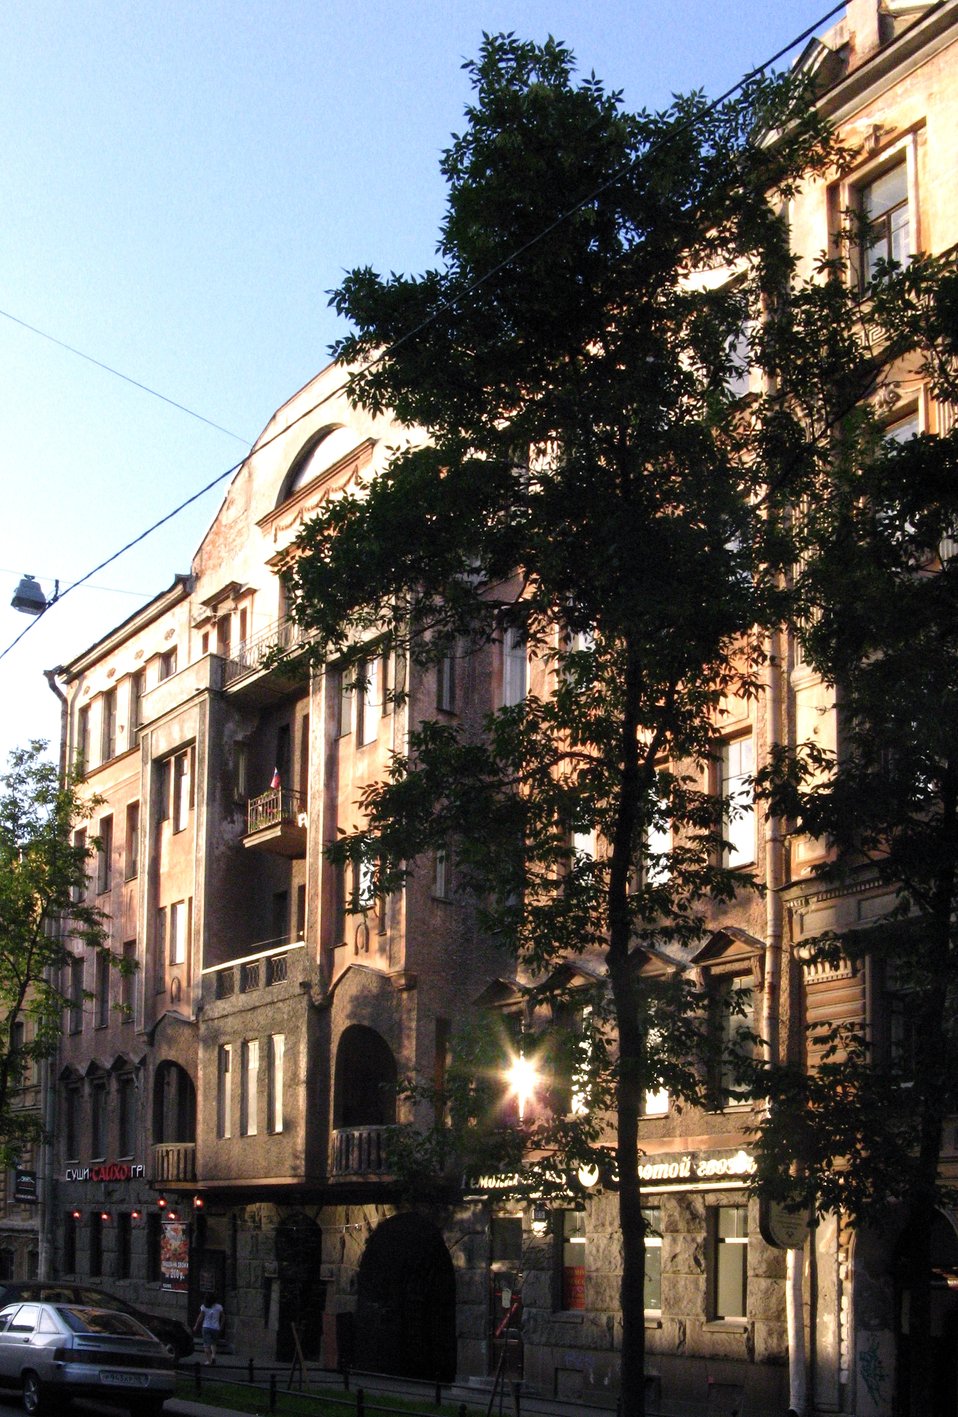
Русский: Дом 25, 10-линия, В.О., Санкт-Петербург, Россия. Building 25, 10-line, Vasilievsky Island, Saint-Petersburg, Russia.